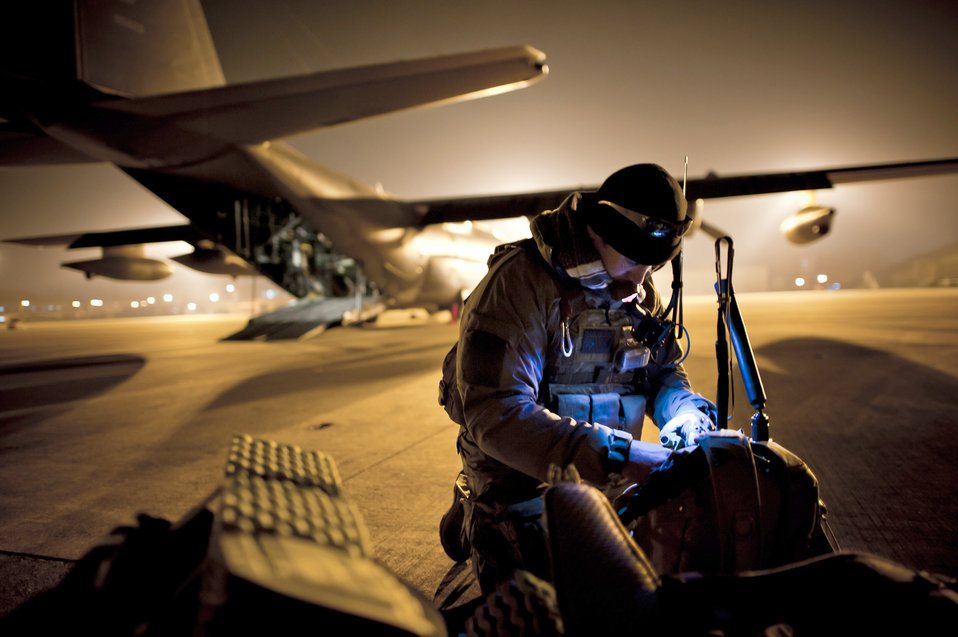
Headline

U.S. Air Force Tech. Sgt. Ray Decker from the 320th Special Tactics Squadron (STS) prepares his rucksack prior to boarding a U.S. Air Force MC-130P Combat Shadow aircraft at Yokota Air Base, Japan, March 16, 2011. Members of the 320th STS from Kadena Air Base, Japan, deployed to Sendai Airport to help clear the runway and make it ready for fixed-wing aircraft traffic.